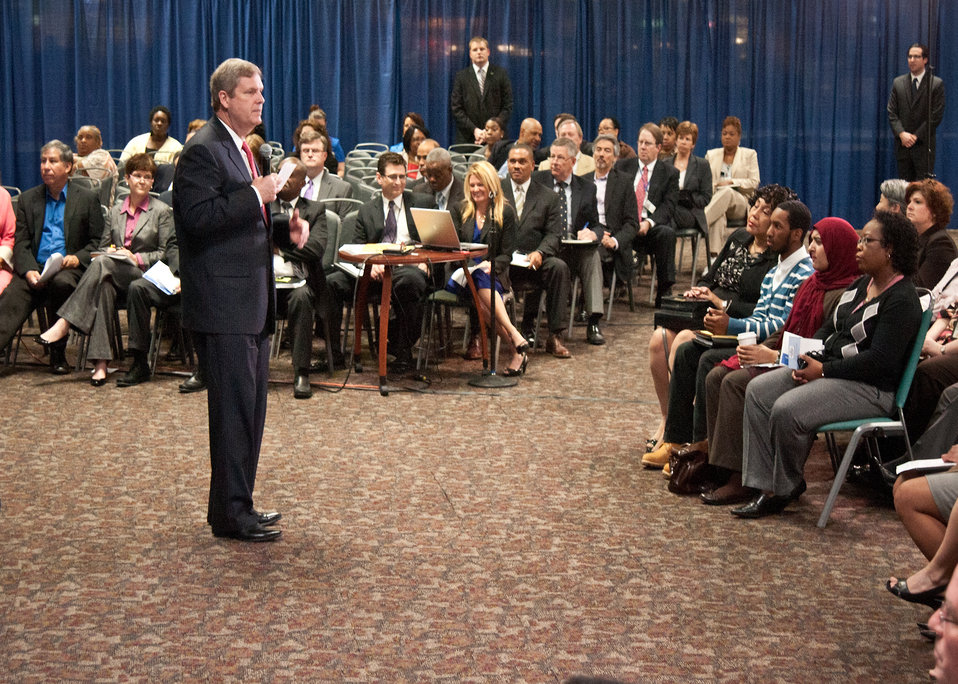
Agriculture Secretary Tom Vilsack offered U. S. Department of Agriculture (USDA) employees the opportunity to ask questions about the Blueprint for Stronger Service Initiative and hear directly from the Secretary Vilsack during the Ask The Secretary event held in the South Building Cafeteria, in Washington, D.C., on Wednesday, March 21, 2012, The Blueprint for Stronger Service Initiative aims to build a modern and efficient service organization that is closely timed with technological innovations - and better suited to respond to 21st century agricultural challenges.